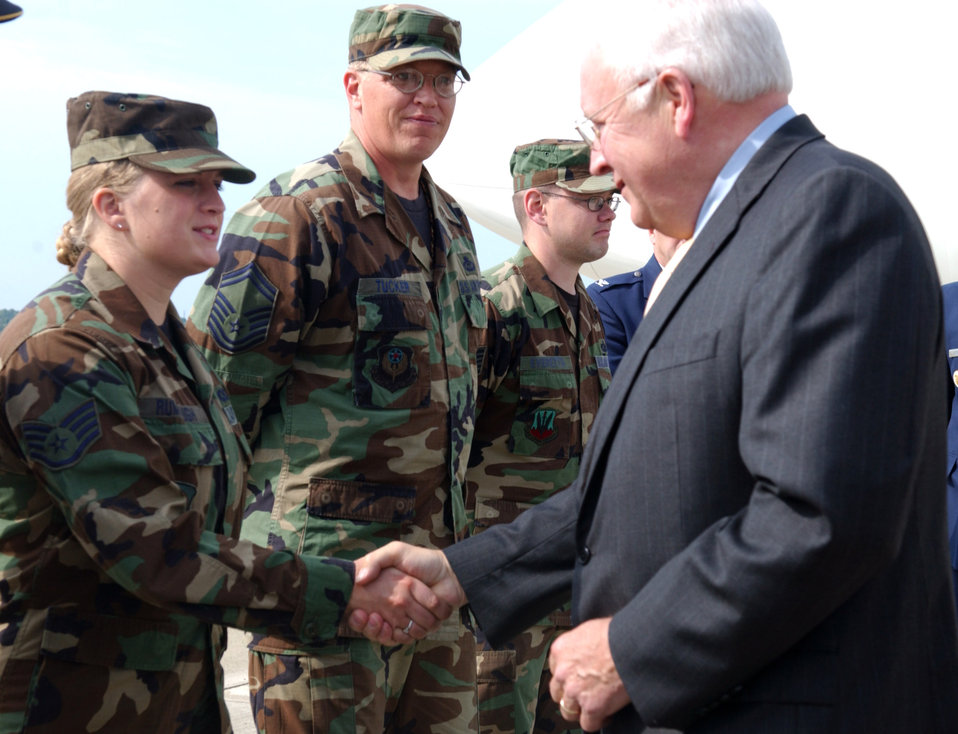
Vice president greets Airmen

Vice President Dick Cheney shakes hands with Staff Sgt. Katjie Rumbaugh Sept. 22. The vice president visited Pittsburgh and thanked six men and women of the Pennsylvania Air National Guard (171st Air Refueling Wing and the 258th Air Traffic Control Squadron) and two members of the Pennsylvania Army National Guard for their service in Iraq and Afghanistan.